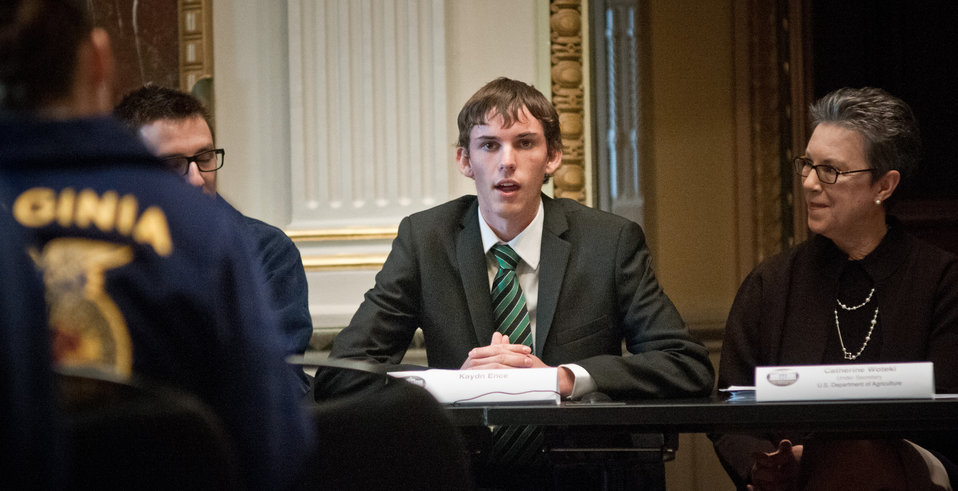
4-H member and Youth Champions of Change panelist Kaydn Ence speaks at the Champions of Change Recognition event in the Indian Treaty Room of the Executive Office Building in Washington, D.C. on Tuesday, Oct. 9, 2012. The Champions of Change program was created to honor ordinary Americans doing great work in their communities. Each week, a different sector is highlighted and groups of Champions, ranging from educators, entrepreneurs and community leaders, are recognized for the work they are doing to serve and strengthen their communities. Agriculture Under Secretary for Research, Education and Economics Catherine Woteki sits to the right of Ence.